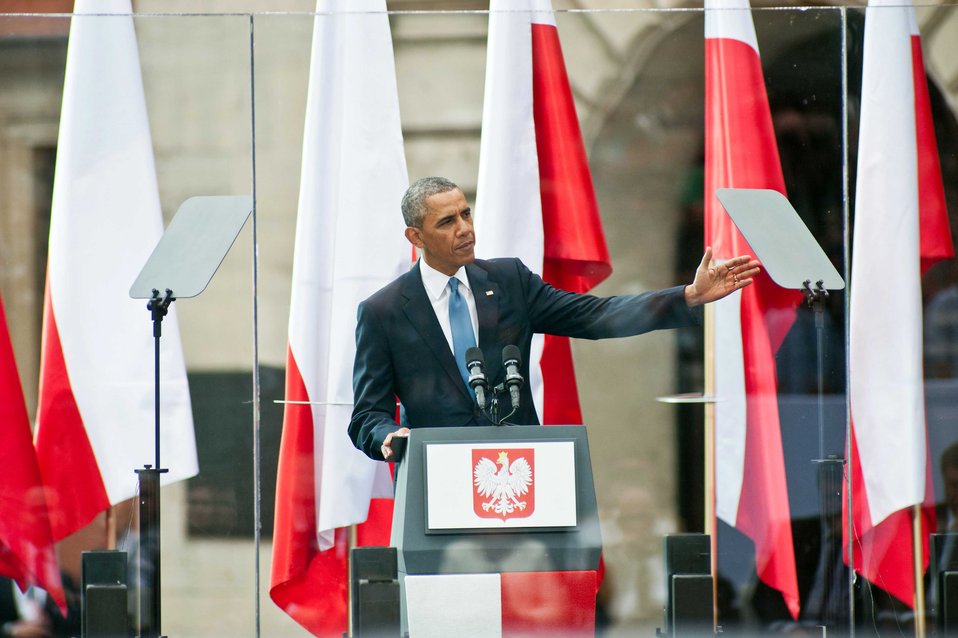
President Obama Speaks at Celebration Marking 25th Anniversary of Freedom

U.S. President Obama speaks at a celebration marking the 25th anniversary of first partly free elections that led to the fall of communism at the Zamkowy (Castle) Square in Warsaw, Poland, on June 4, 2014. [U.S. Mission to Poland photo by Jakub Szymczuk]